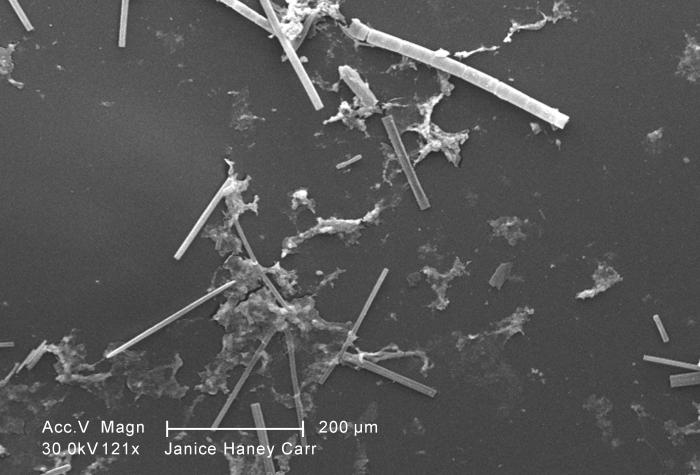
Under a relatively low magnification of 121X, this scanning electron micrograph (SEM) of an untreated water specimen extracted from a wild stream mainly used to control flooding during inclement weather, revealed the presence of unidentified organisms, which included bacteria, protozoa, and algae. In this particular view, numbers of what appeared to be rod-shaped sections of various sizes were scattered throughout the field of view, which though unconfirmed, may have been vegetative in nature, and possibly algal organisms. There were also patches of biofilm present as well. See PHIL 11786 for a colorized version of this image.